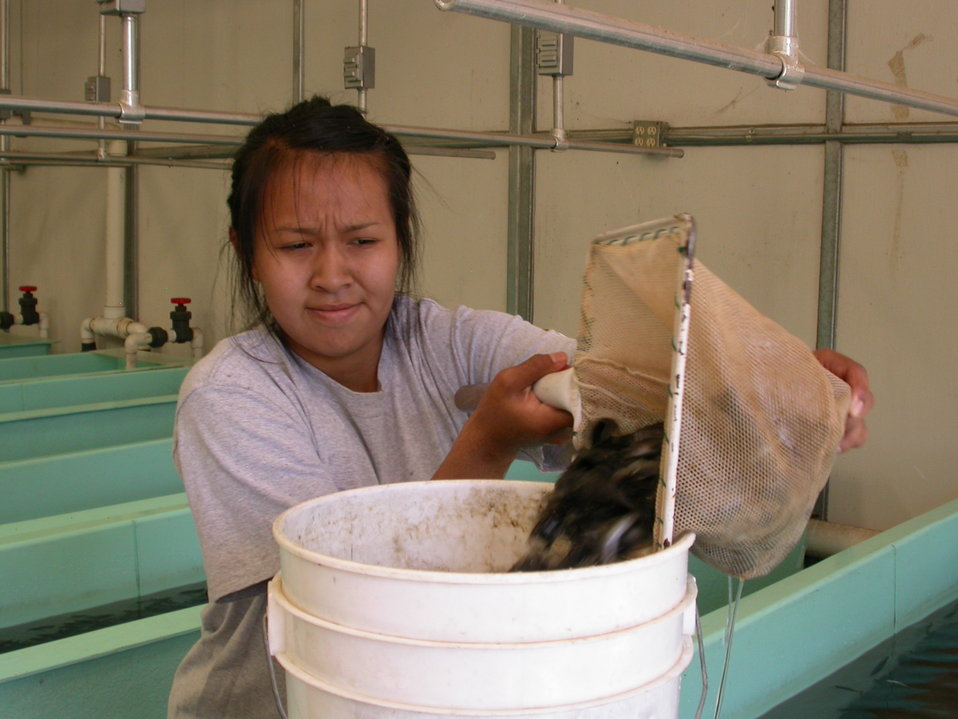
Working in a Fishery